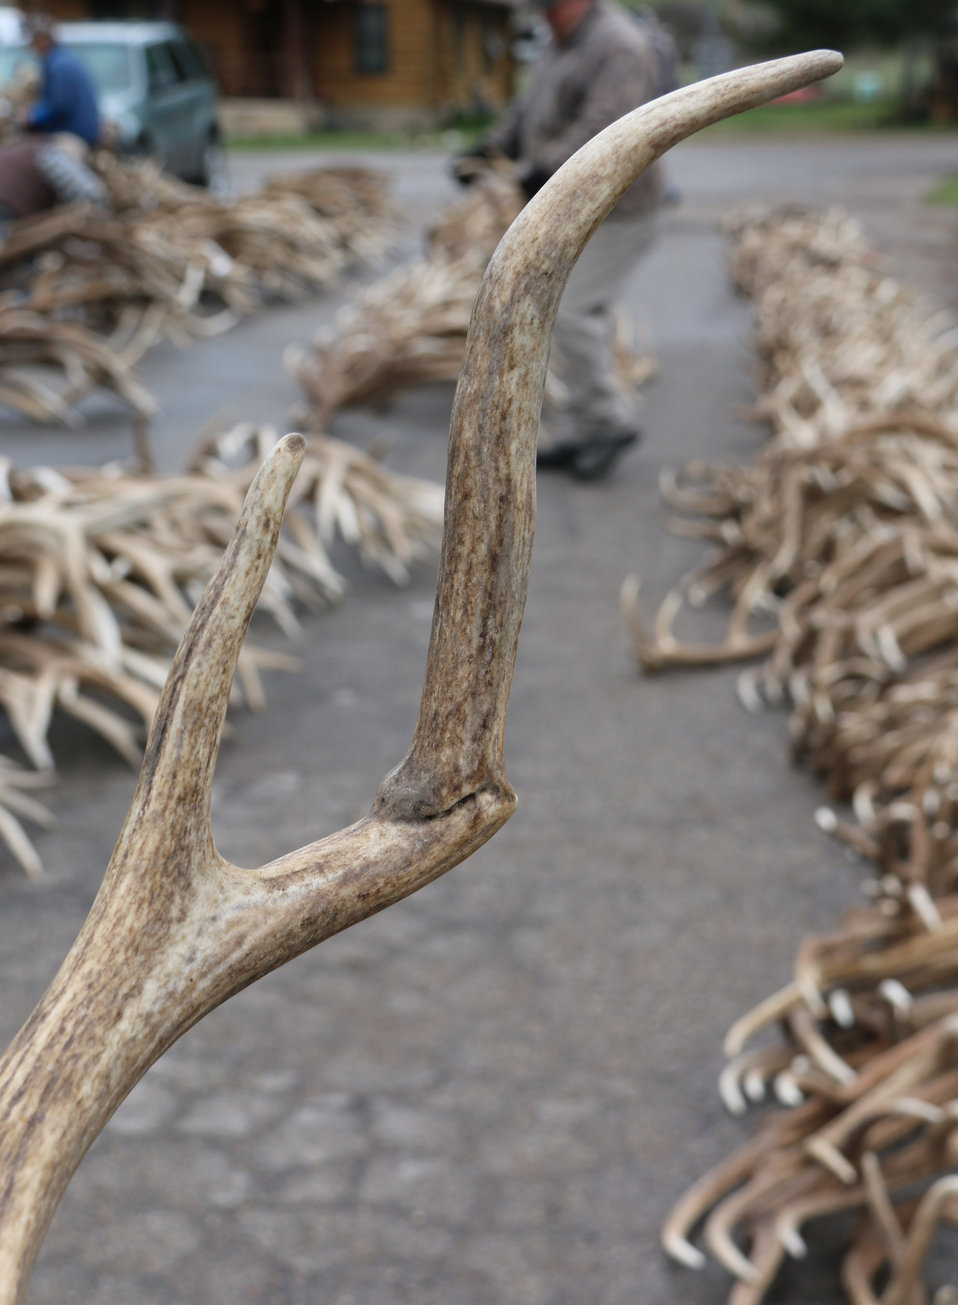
Change in Growth

This antler was found while sorting and prepping for the annual Boy Scout antler auction. Likely an injury caused this noticeable change in the growth pattern.